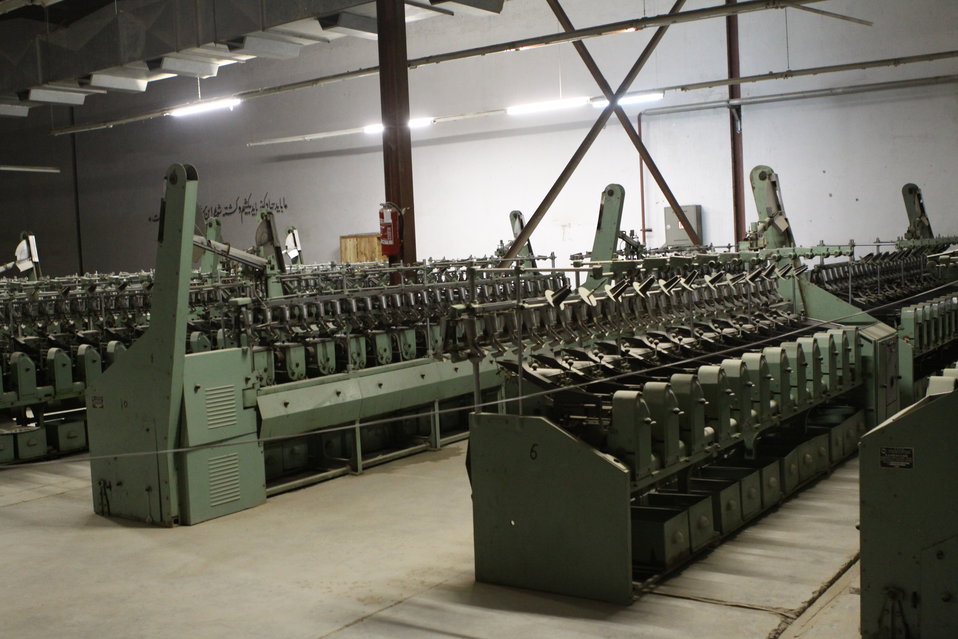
100525 Hirat Textile Company 749